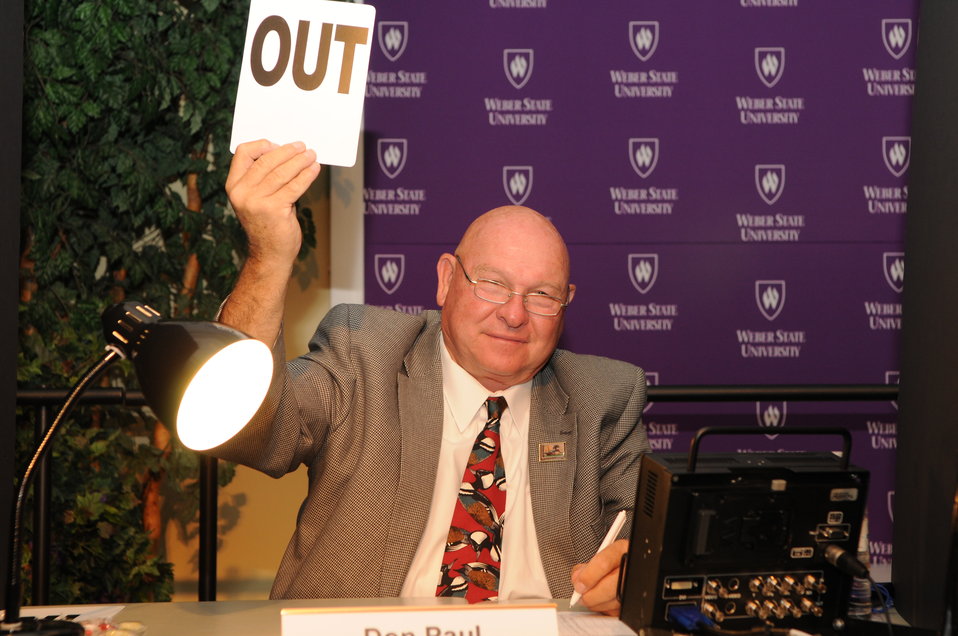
Artwork Judge

The U.S. Fish & Wildlife Service sponsored the 2012 Federal Duck Stamp Art Contest September 28 and 29 in Ogden, Utah, at Weber State University. A panel of five judges was responsible for choosing the art work used to design the 2013-2014 Migratory Bird Hunting and Conservation Stamp.